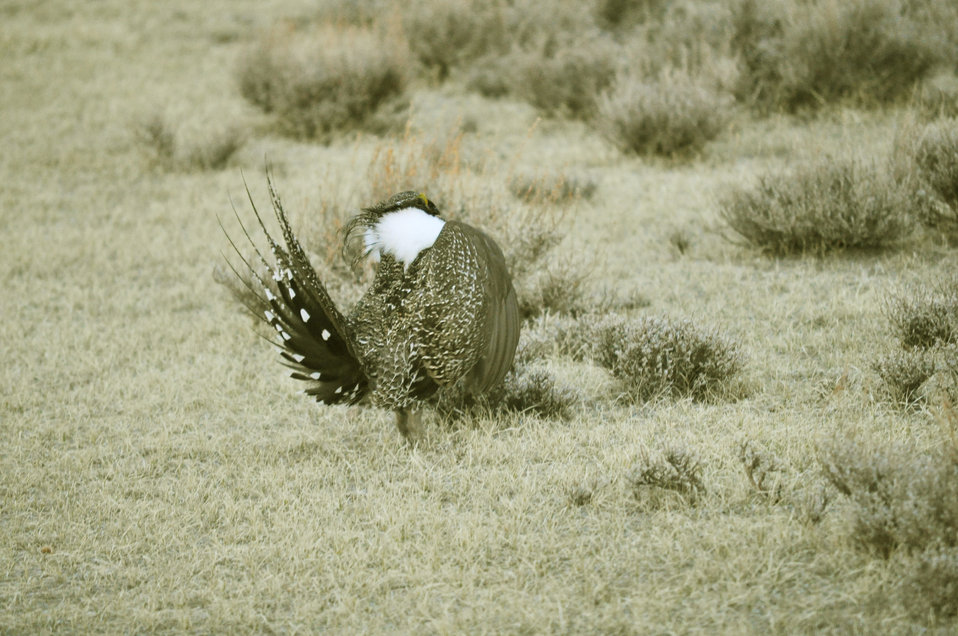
Male greater sage-grouse struts at lek (dancing or mating grounds) to attract females near Bodie, California.